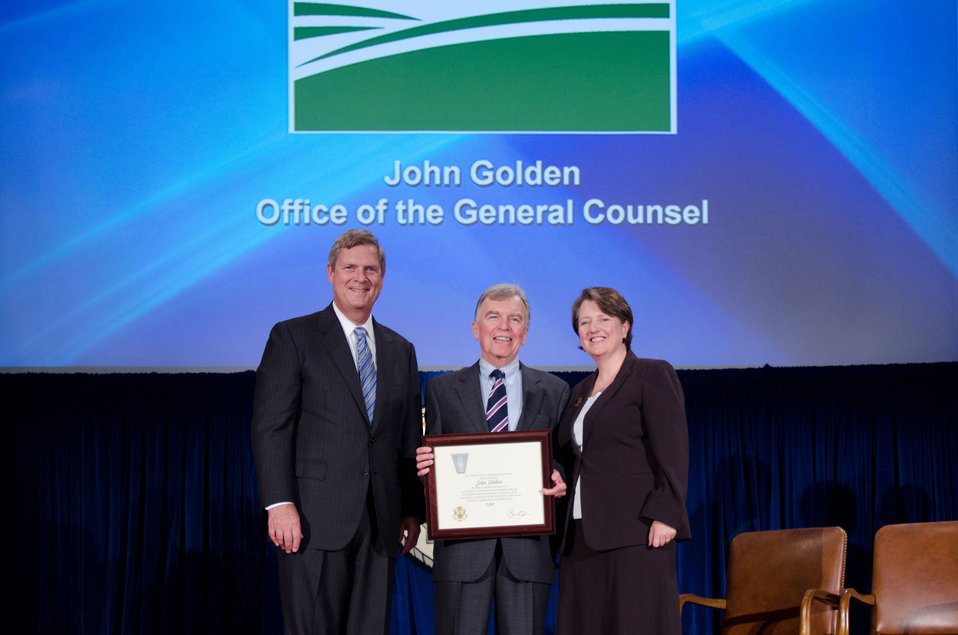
Agriculture Secretary Tom Vilsack (l) and Deputy Secretary Kathleen Merrigan (r), presents the Meritorious Executive Award to John Golden, Associate General Counsel, Marketing and Regulatory, Office of the General Counsel, The President of the United States of America has conferred on John Golden the rank of Meritorious Executive in the Senior Executive Service for sustained extraordinary accomplishment in management of programs of the United States Government and for leadership exemplifying the highest standards of service to the public reflecting credit o the career civil service. On Wednesday, September 14, 2011 in the Jefferson Auditorium at the US Department of Agriculture in Washington, DC.